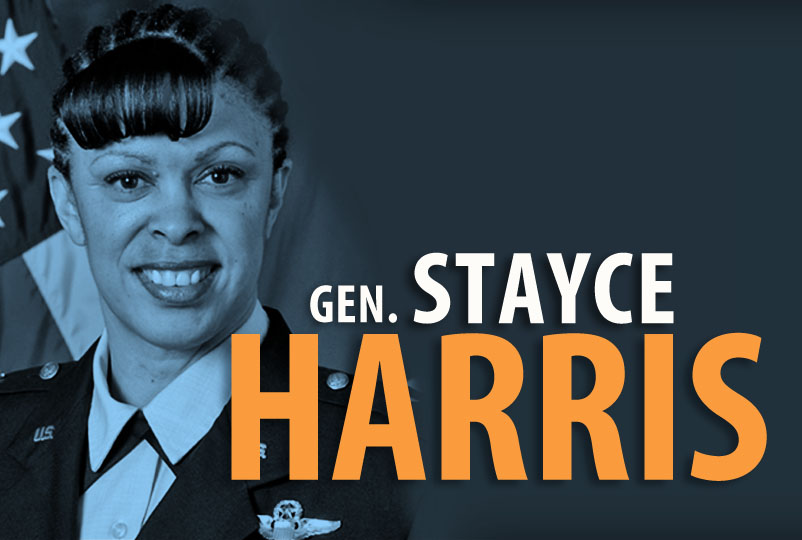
Gen. Stayce Harris